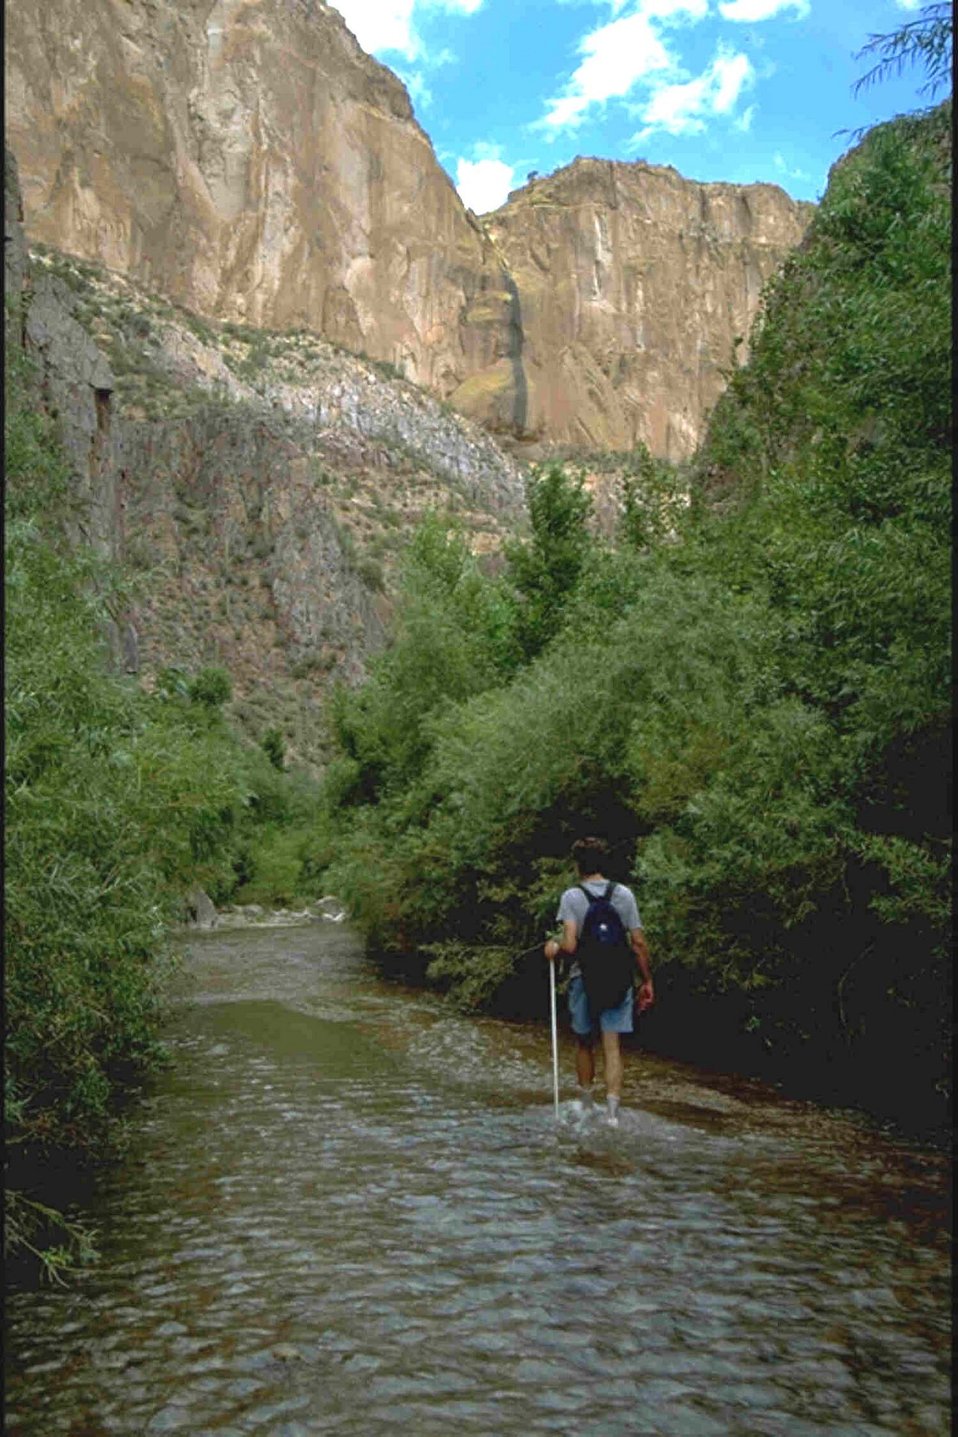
A hiker wades the creek along beautifully banded walls near Painted Cave Canyon.